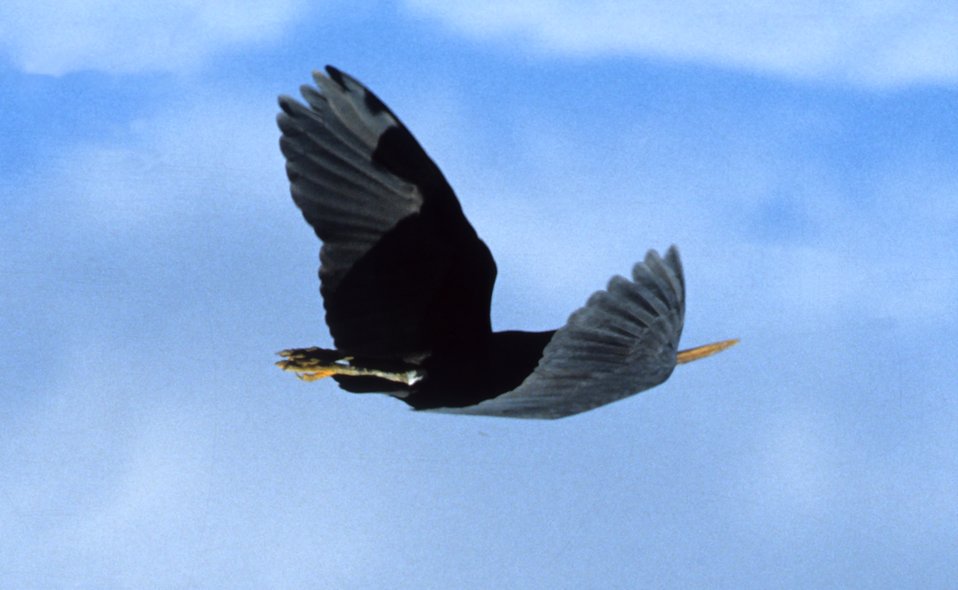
A large-billed water-bird in flight as seen looking to the starboard quarter.